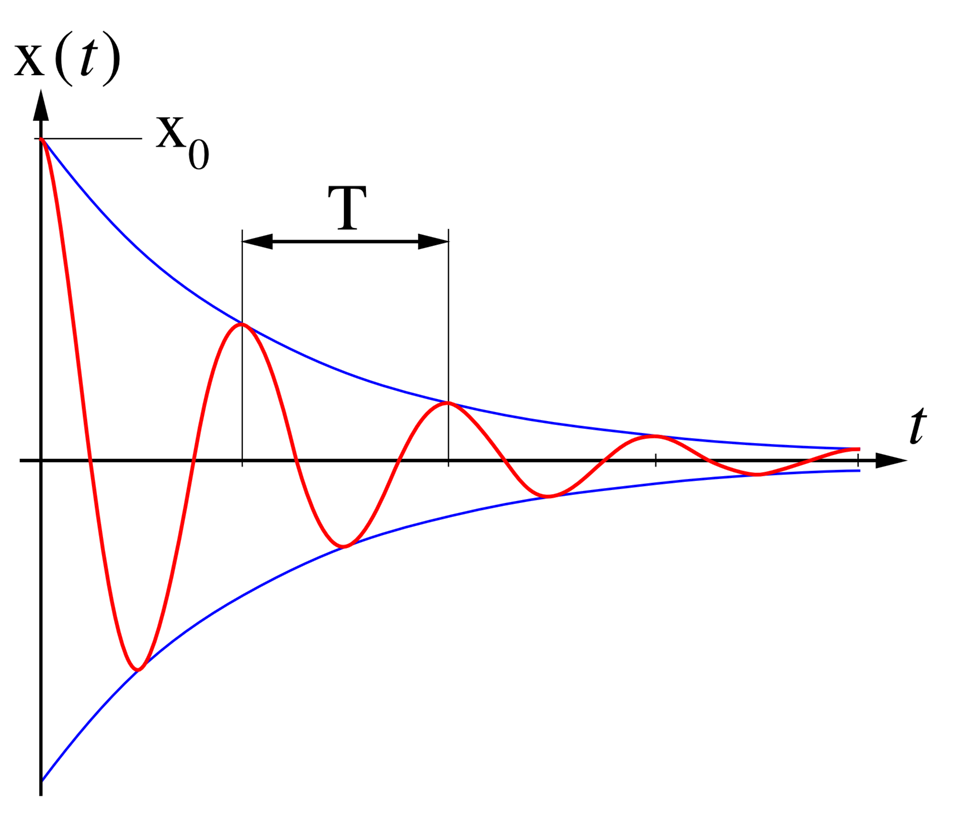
Graph of a damped oscillation. Deflection x Deutsch: Funktionsgraph einer gedämpften Schwingung. x als Auslenkung